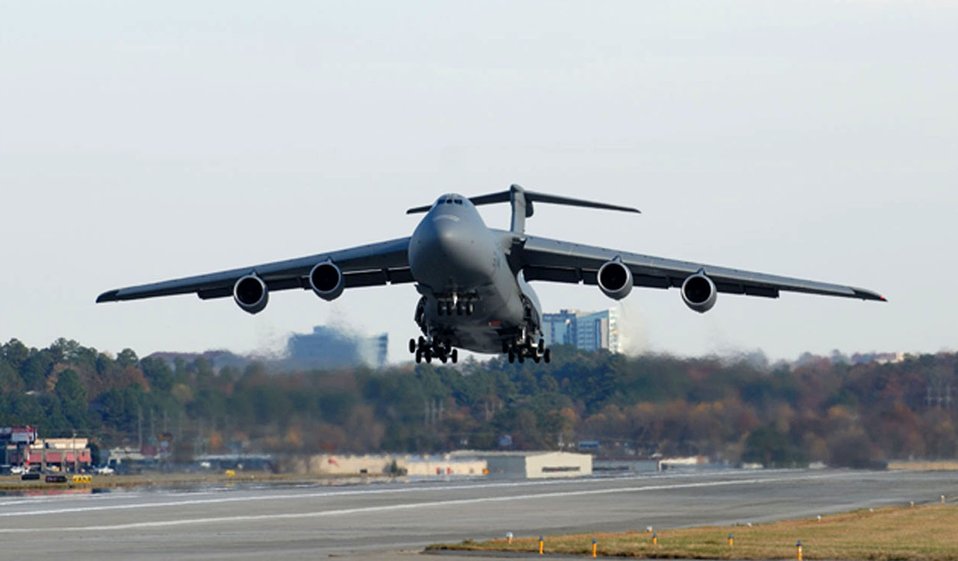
Second C-5M Super Galaxy takes flight

The second fully modernized Lockheed Martin C-5M Super Galaxy test aircraft makes its first flight Nov. 17 from Dobbins Air Reserve Base, Ga.